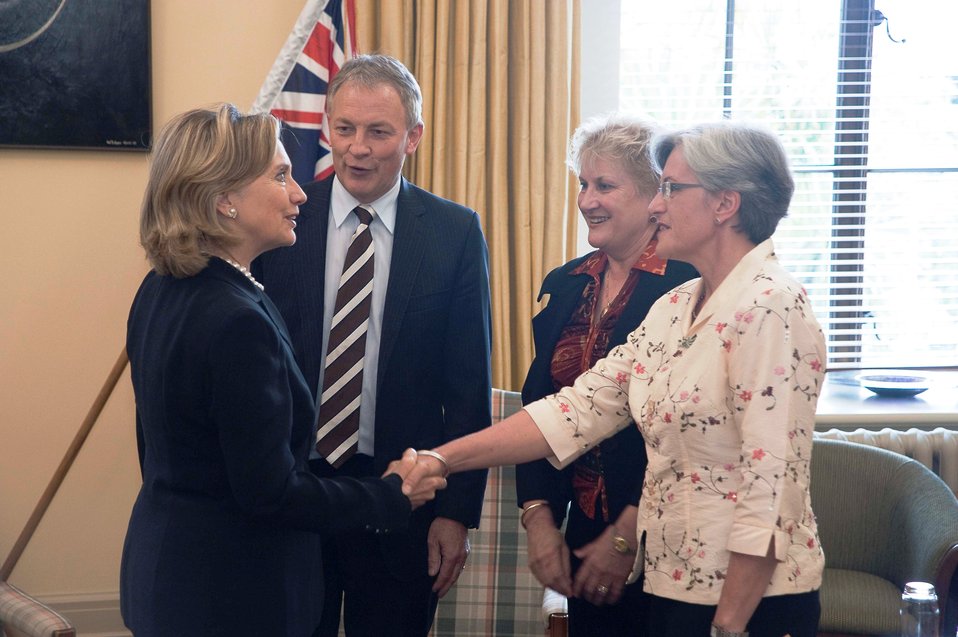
Secretary Clinton Meets With New Zealand Opposition Leaders

U.S. Secretary of State Hillary Rodham Clinton shakes hands with a New Zealand Minister of Parliament as New Zealand Member of Parliament Annette King and New Zealand Opposition Leader Philip Goff look on, in Wellington, New Zealand, on November 4, 2010.